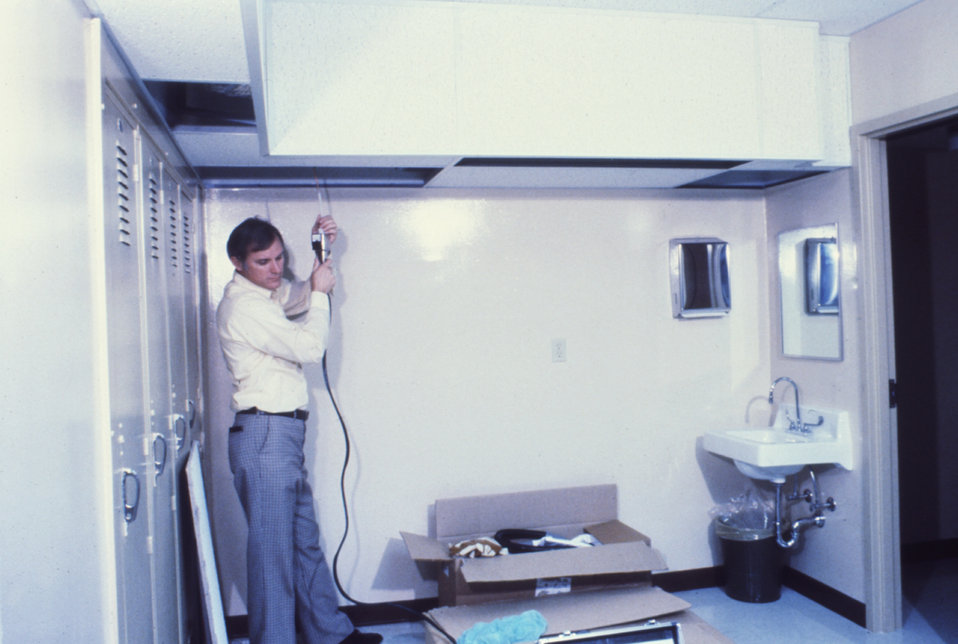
This photograph depicts an individual preparing the Vicker's isolation suite at Georgia Baptist Medical Center (now Atlanta Medical Center) in 1980.